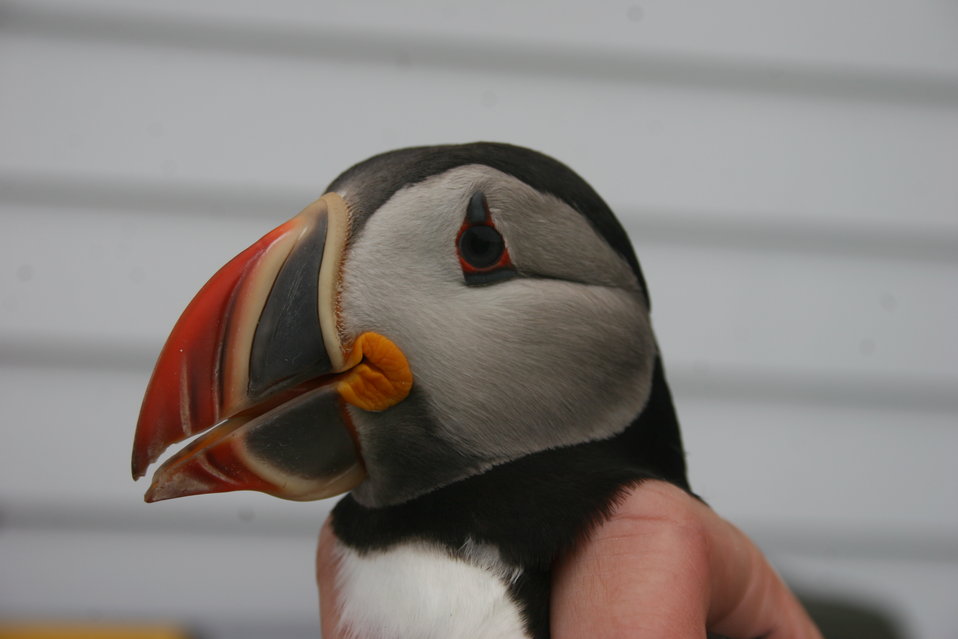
Puffin up close